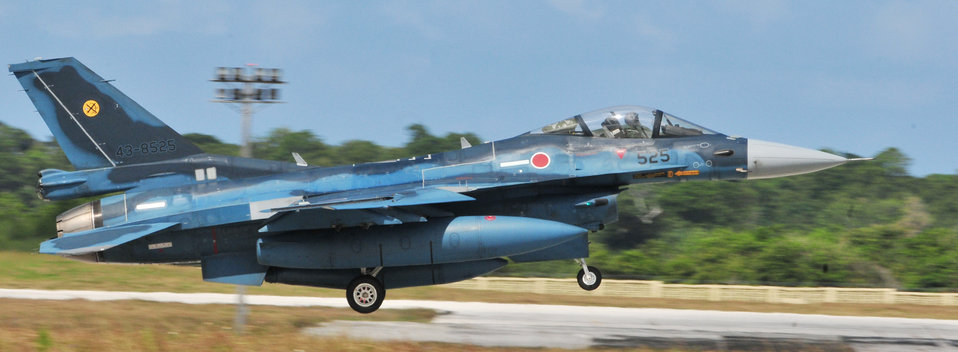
Aircraft arrive at Andersen for Cope North 10-1 kickoff

A Japan Air Self Defense Force F-2 fighter lands in order to participate in the two-week Cope North exercise Feb. 5, 2010, at Andersen Air Force Base, Guam. The Japanese F-2 single-engine fighter has performance capabilities roughly comparable to those of the F-16 Fighting Falcon.